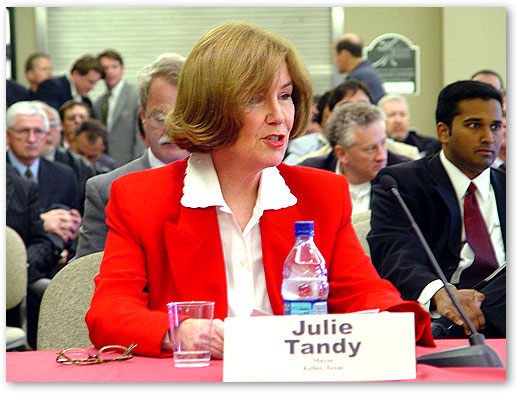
Keller, Texas, Mayor Ms. Julie Tandy testifying at FCC Open Commission Meeting, Keller, Texas.